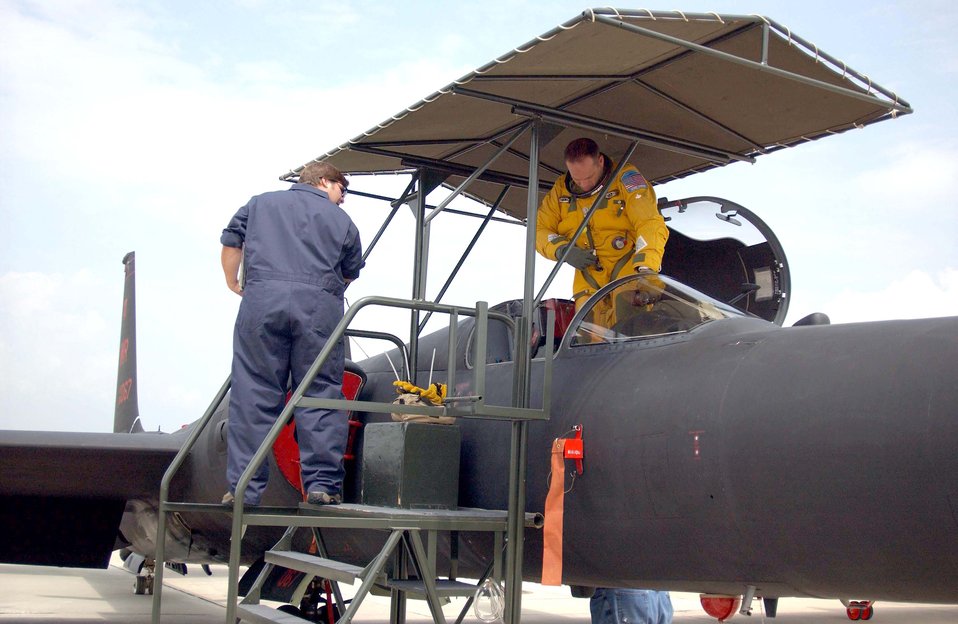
'Dragon Lady' celebrates 50th anniversary

ROBINS AIR FORCE BASE, Ga. -- Maj. Shane Johnson exits the U-2